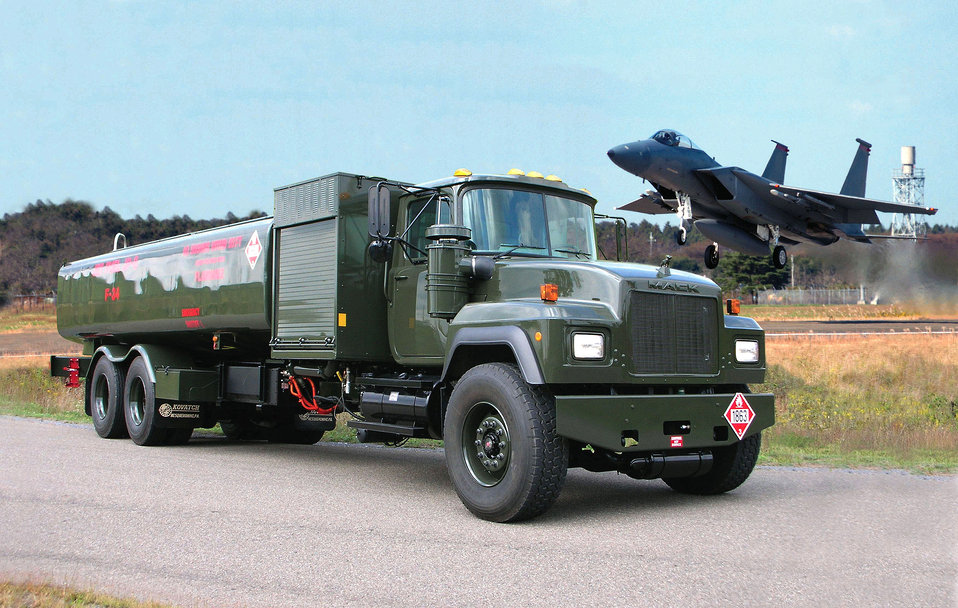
Fuel efficient refueler

ROBINS AIR FORCE BASE, Ga. -- The R-11 hybrid electric refueling truck is expected to save the Air Force energy dollars.